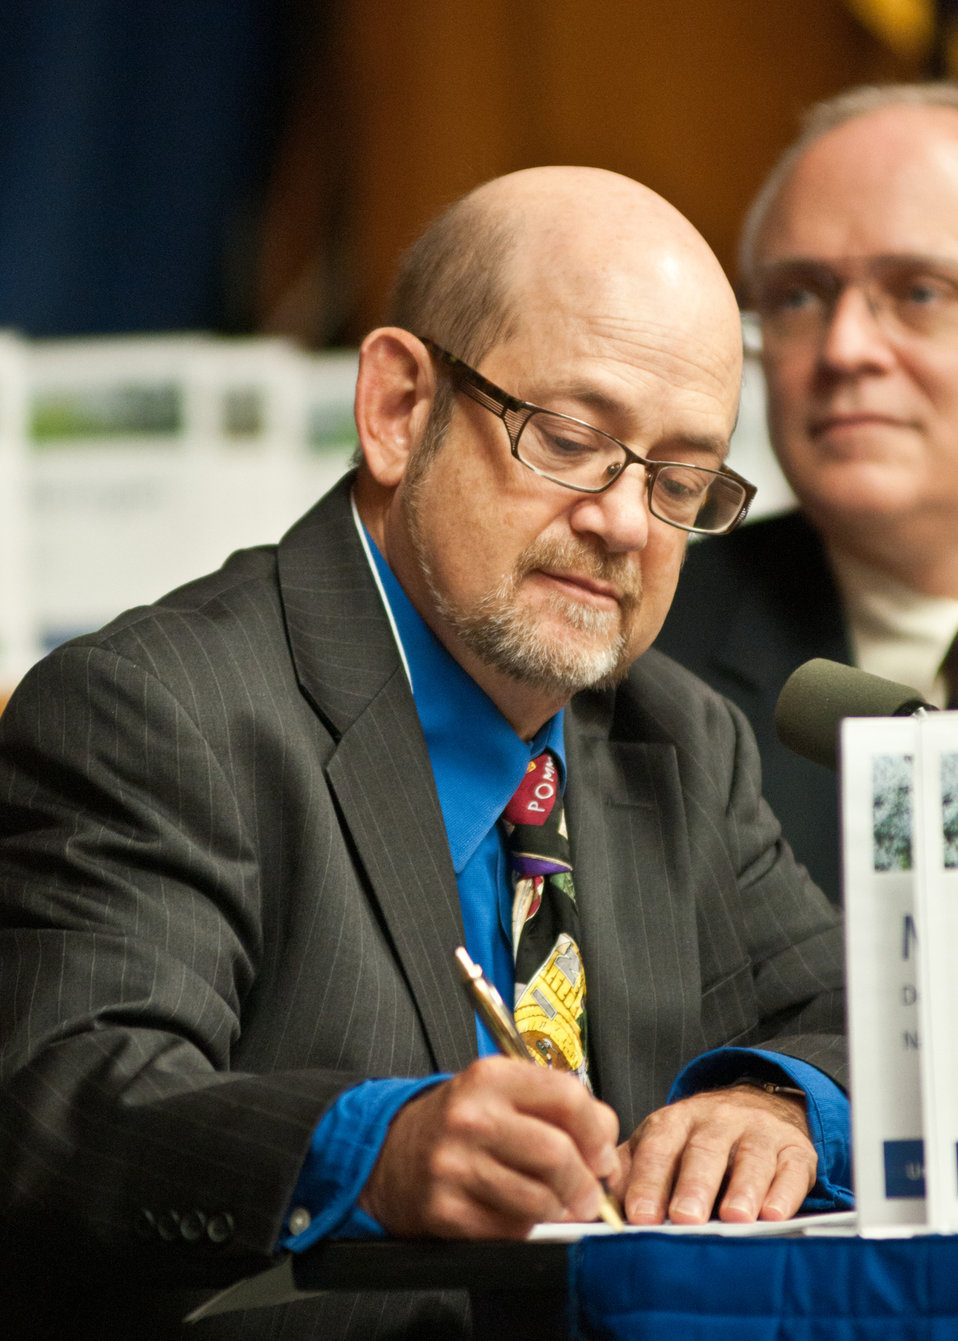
Mark Lipson, Organic and Sustainable Agriculture Policy Advisor listens to stakeholders and members of the public during the USDA Activities and Priorities Related to Organic Agriculture and Markets Public Listening Session held at the U.S. Department of Agriculture, in Washington DC, Tuesday, September 20, 2011. The purpose of the event was to gain the perspective of stakeholders and members of the public, important tools to help USDA Programs examine and prioritize their activities and objectives in order to best serve the organic community.